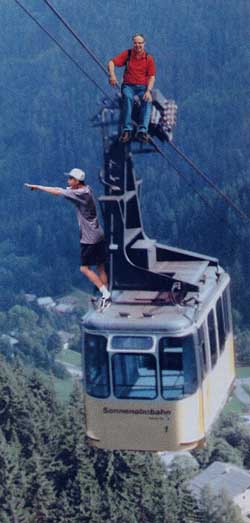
Cablecar.trick.250pix